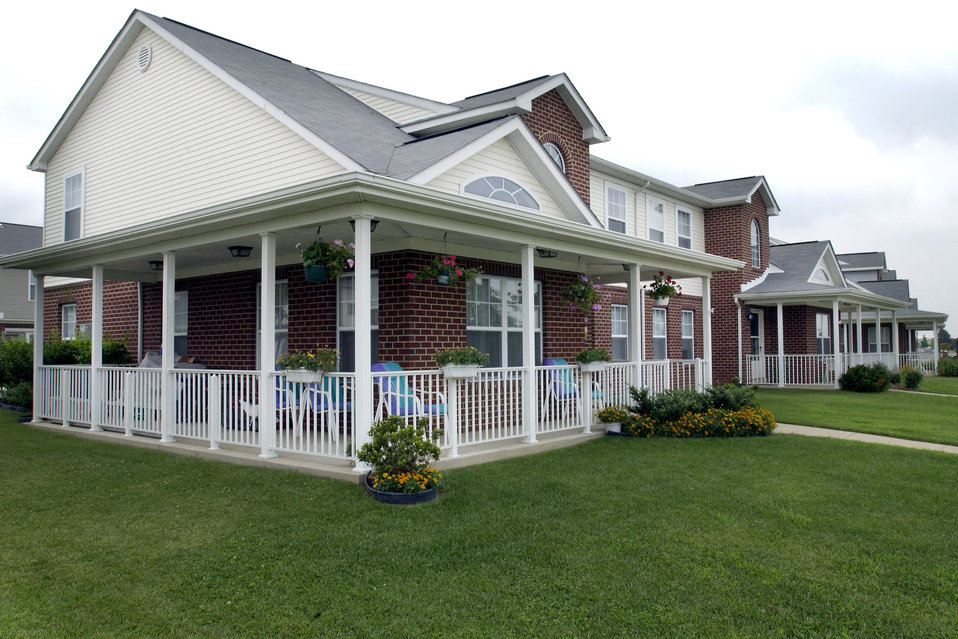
Safe, adequate housing gets highest priority

BOLLING AIR FORCE BASE, D.C. -- The recently opened housing here is part of the base's project to replace substandard housing and improve the quality of life for Air Force families. Providing adequate housing allows Airmen to focus on the mission knowing their families have a safe place to live, said Air Force Chief of Staff Gen. John P. Jumper.